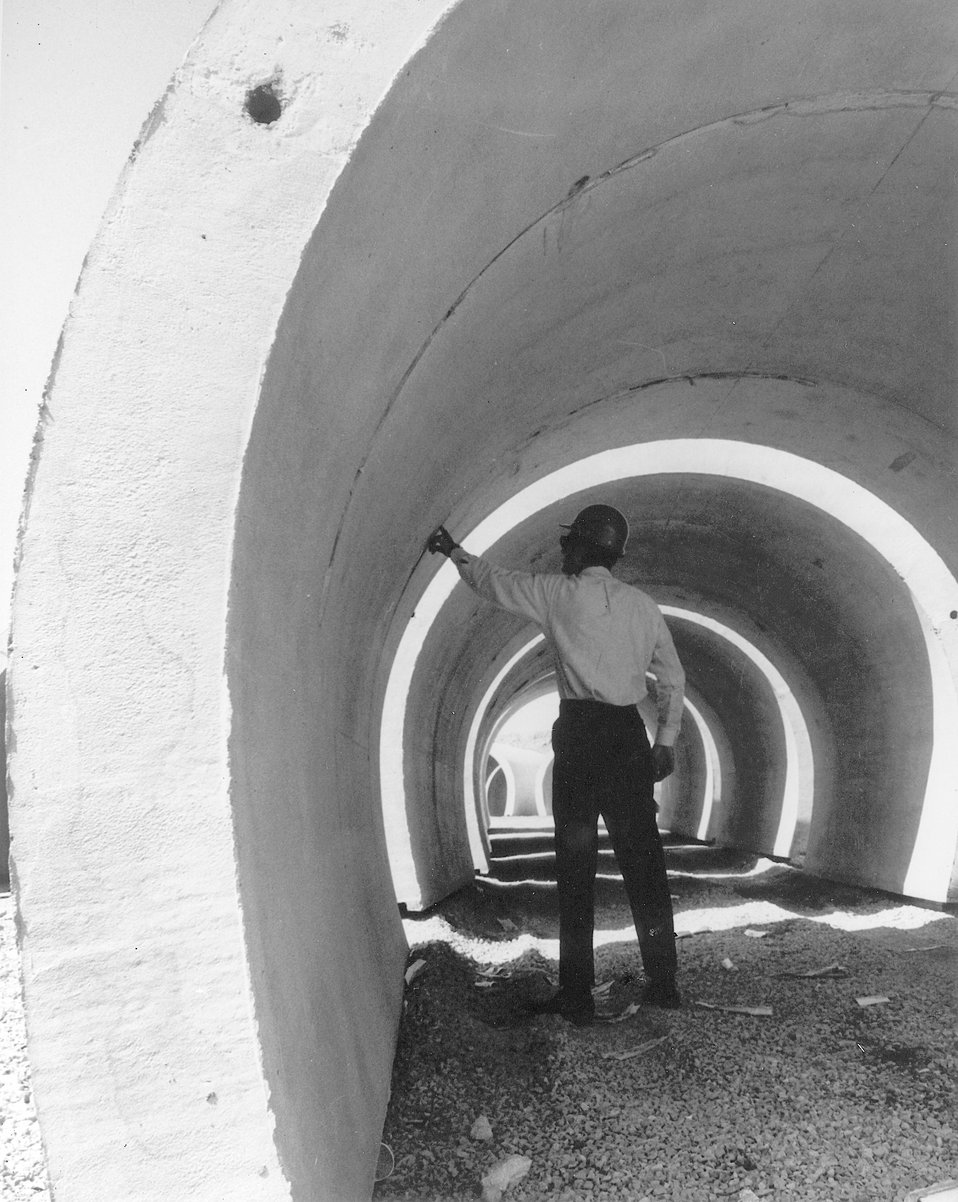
Precast concrete sections are fitted into place after being deposited in position by a special handling vehicle at the AEC NAL.
c.1970